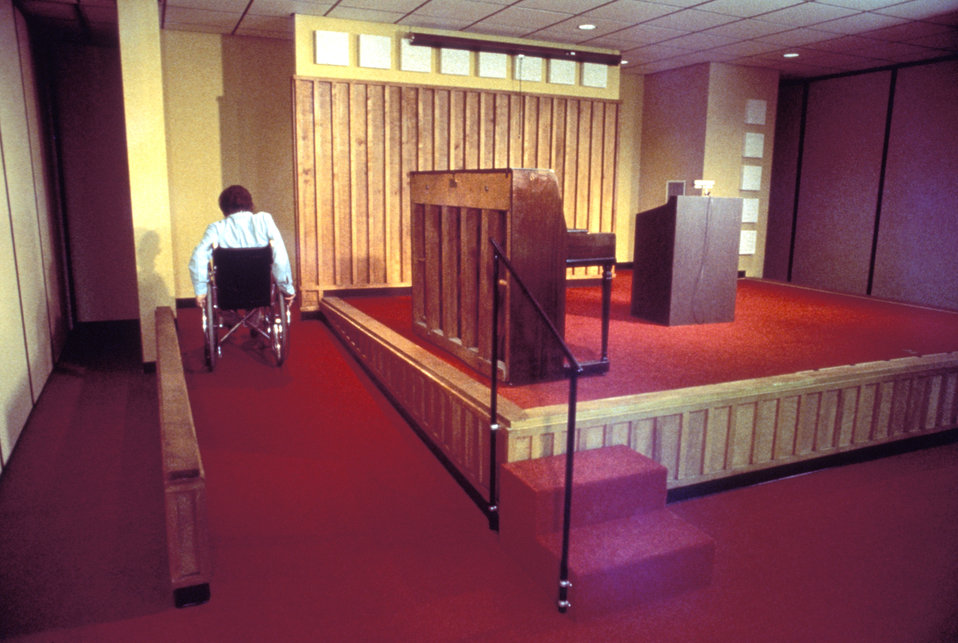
This 1990 image depicted a man using a wheelchair in order to traveling up a ramp to a stage area of a performance setting. Nearby stairs were also available to use. Providing ramped and stair access (or even level access) allowed a wide range of people to choose the manner of ascent that worked best. This allowed everyone to participate as they wished. Designing publicly-accessible sites with the mobility-challenged in mind, makes for an overall more user-friendly environment for all, and is quite often, made even more efficient from a utilitarian standpoint.